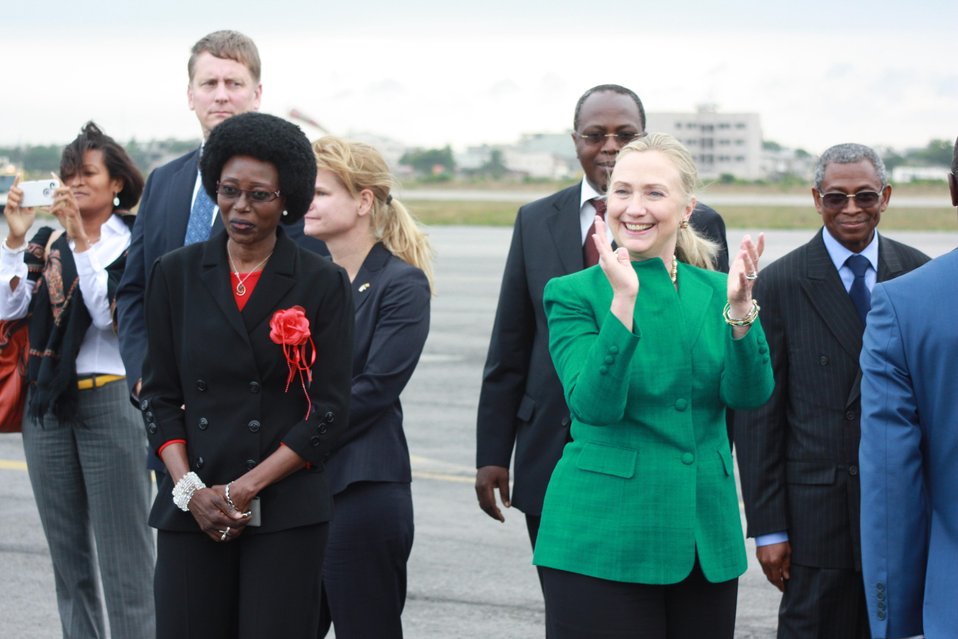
Secretary Clinton Is Greeted By Special Advisor Miriam Aladji Boni Diallo

U.S. Secretary of State Hillary Rodham Clinton is greeted by Benin's Special Advisor for Diplomatic Affairs Miriam Aladji Boni Diallo upon arriving in Cotonou, Benin, on August 10, 2012.